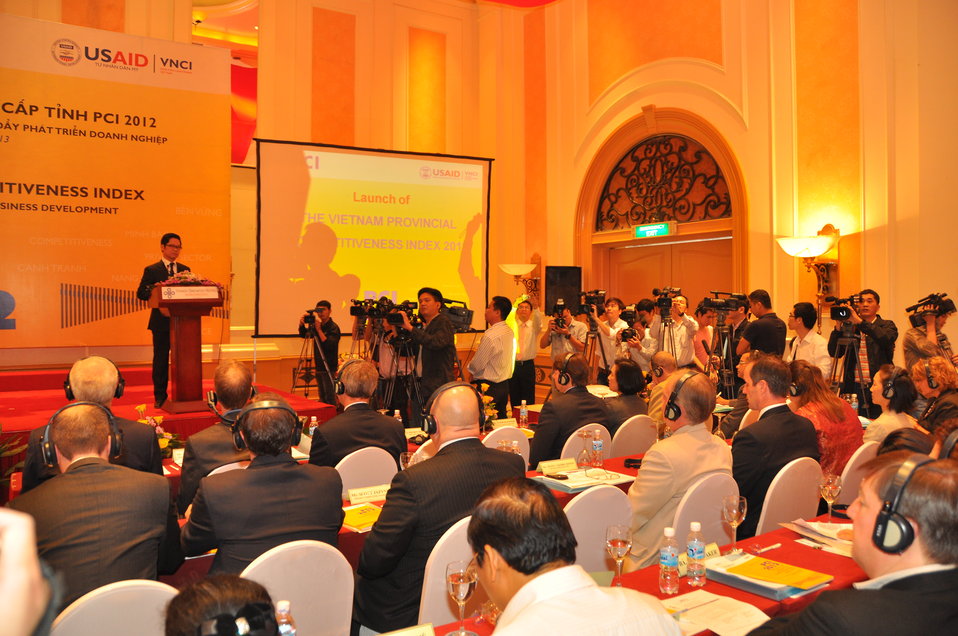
Provincial Competitiveness Index Launch, March 14, 2013

Hanoi, March 14, 2013